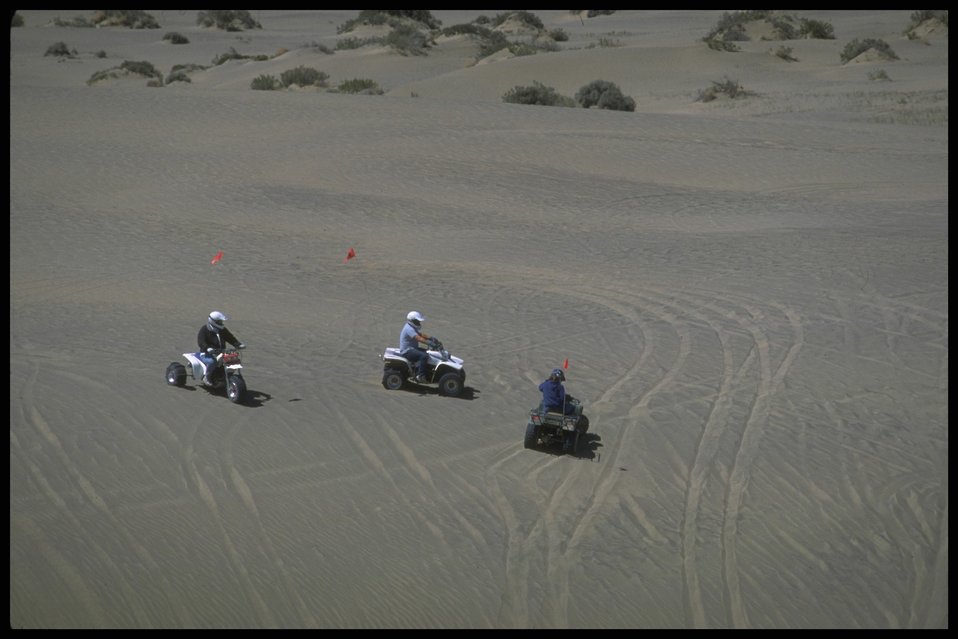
ATV's on Sand Dunes, Christmas Valley, Lakeview District.